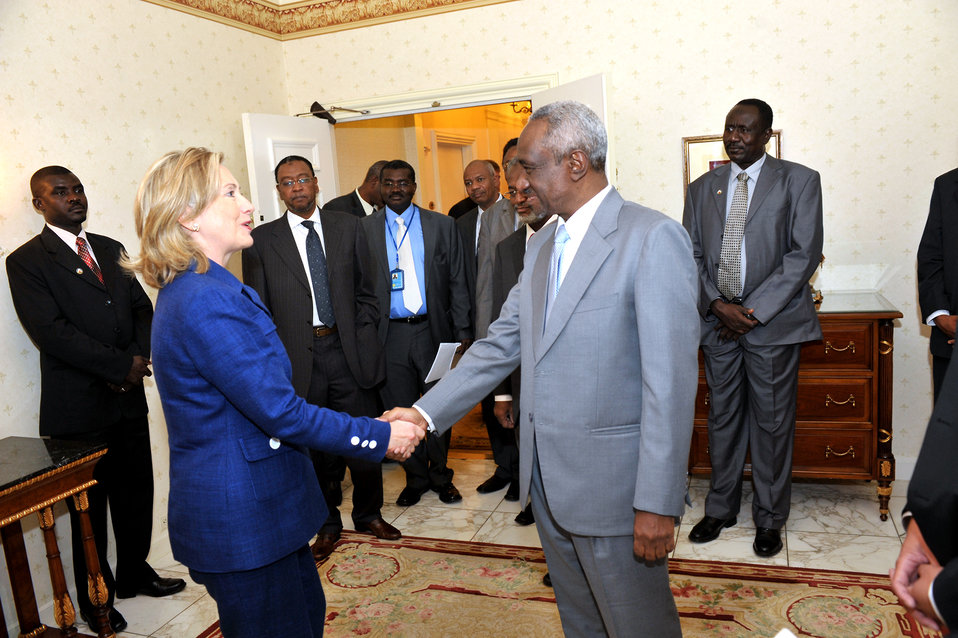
Secretary Clinton Shakes Hands With Sudanese Vice President Ali Osman Taha

U.S. Secretary of State Hillary Rodham Clinton shakes hands with Sudanese Vice President Ali Osman Taha after their bilateral meeting at the Waldorf-Astoria in New York, New York, on September 21, 2010.